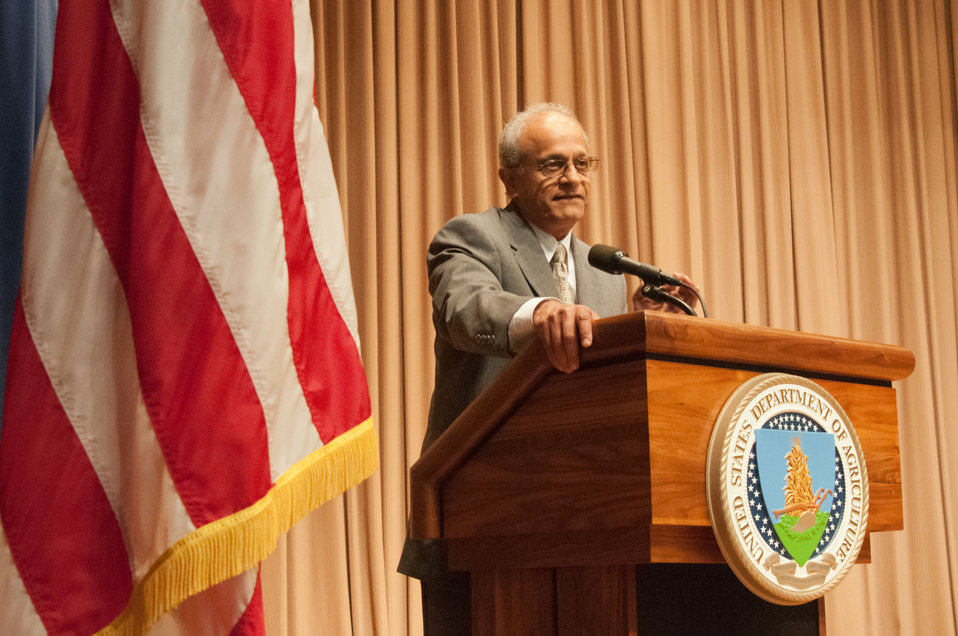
Agriculture National Institute of Food and Agriculture Director Dr. Sonny Ramaswamy introduced Agriculture Deputy Secretary Kathleen Merrigan at the 2012 Asian Pacific American Heritage Observance “Striving for Excellence in Leadership, Diversity and Inclusion” at the U.S. Department of Agriculture in Washington, D.C. on Thursday, May 24, 2012.